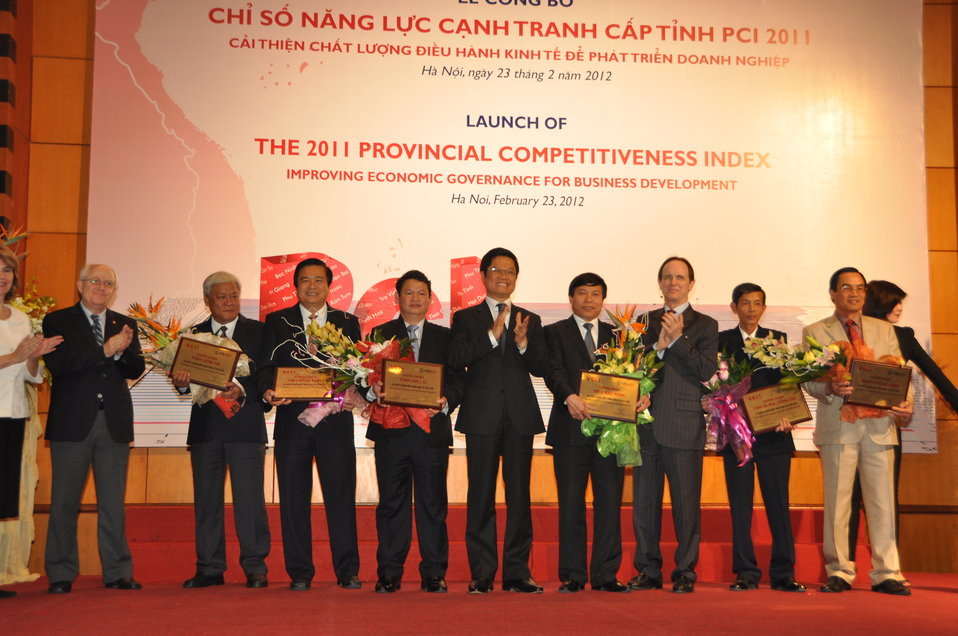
Provincial Competitiveness Index 2011 Launch